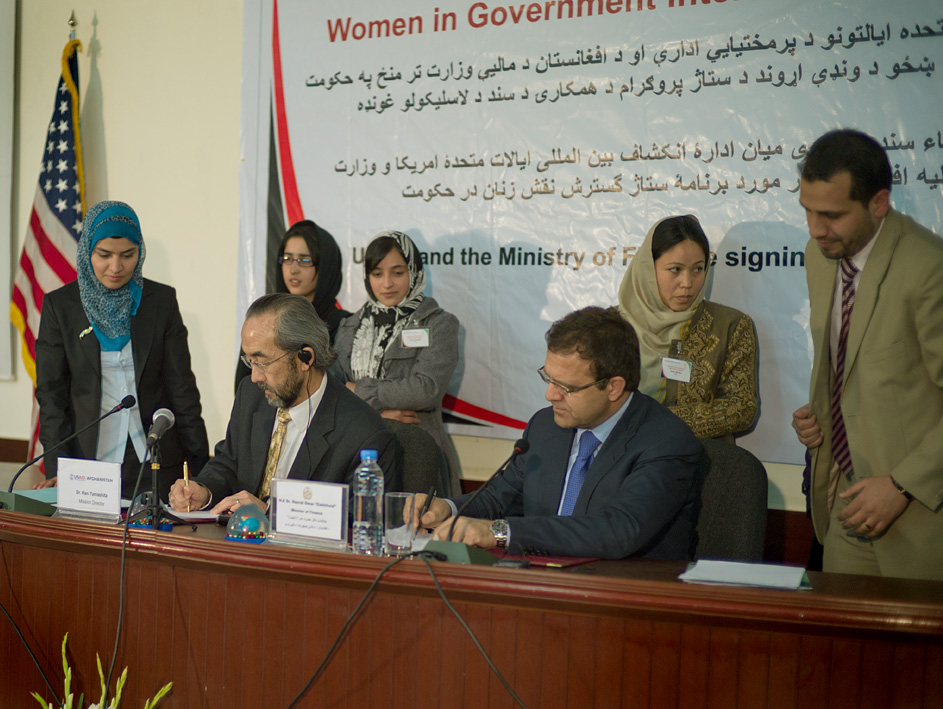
Image 5 3:18:12 signing